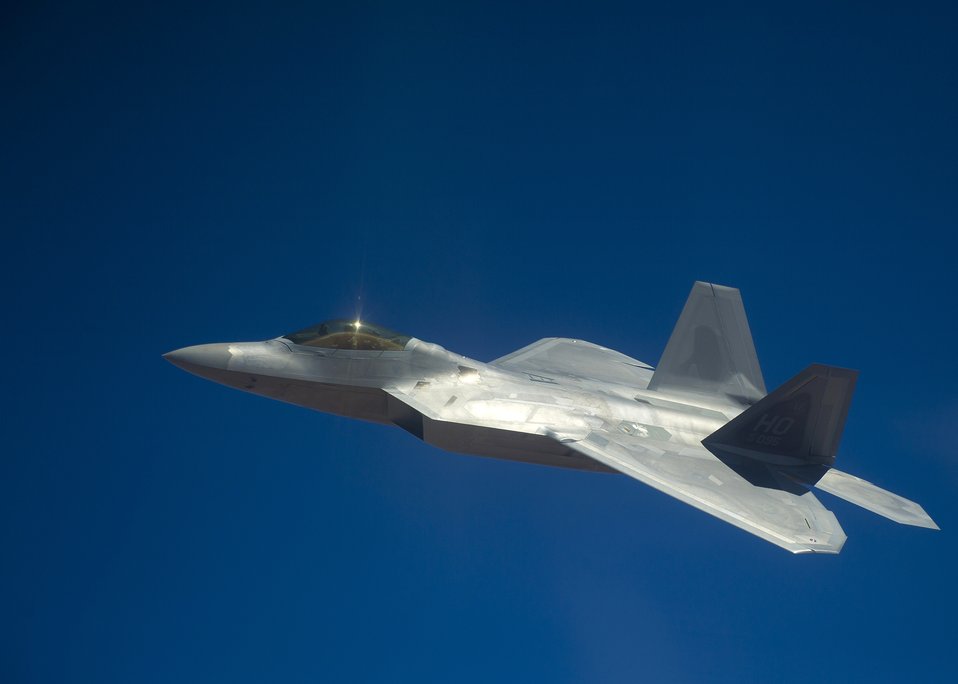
Soaring through the sky

An F-22 Raptor flies over the Tularosa Basin Sept. 28 2011, during an air-to-air combat mission. The Raptor is assigned to 7th Fighter Squadron.